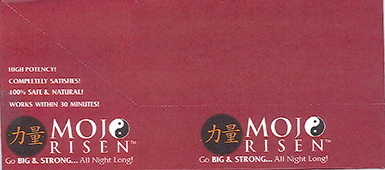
RECALLED – Dietary Supplement

April 1, 2014 – Product Recall – Nova Products, Inc. Issues Voluntary Nationwide Recall of Dietary Supplements with Undeclared Active Pharmaceutical Ingredients.